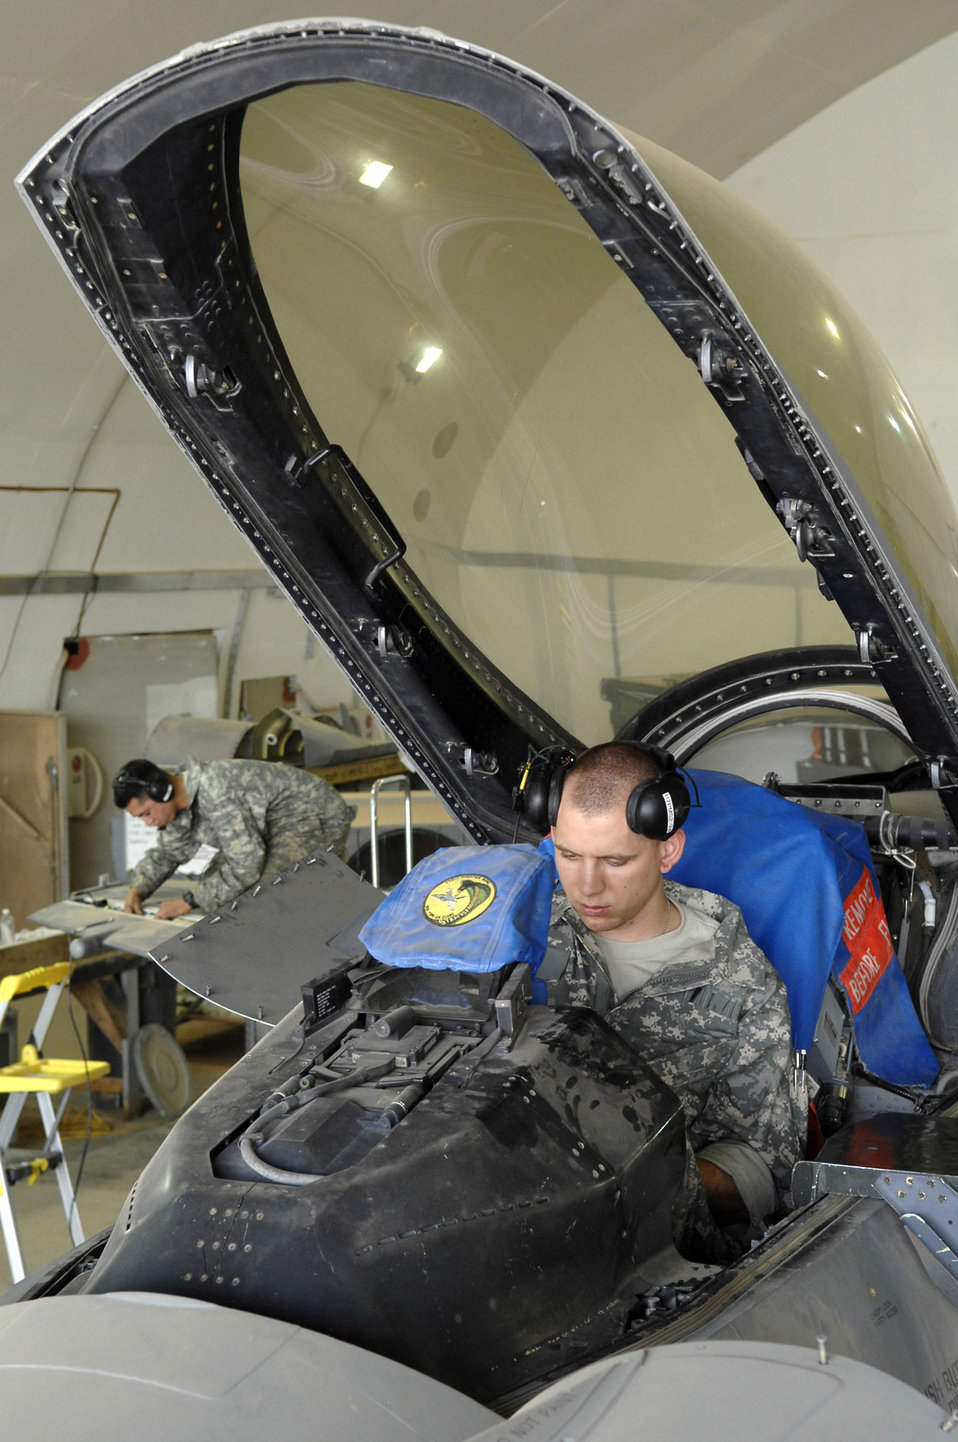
Just a phase

Airman 1st Class Shane Bridges goes through a checklist of items during a phase inspection of an F-16 Fighting Falcon June 18 at Joint Base Balad, Iraq. A phase inspection checks critical aircraft systems to ensure they are in working order and can continue to fly combat missions over Iraq. Airman Bridges is a 332nd Expeditionary Aircraft Maintenance Squadron crew chief deployed from Shaw Air Force Base, S.C.